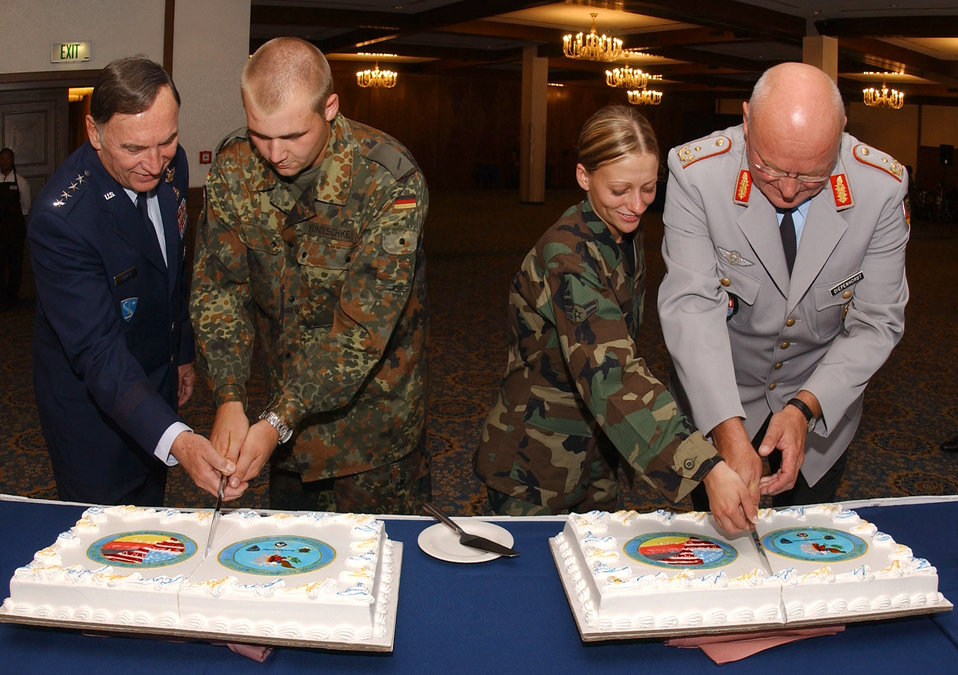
USAFE commander honors German military

(Left to right) Gen. William T. Hobbins, U.S. Air Forces in Europe commander; Pvt. Christian Kunitschke, German Army; Airman 1st Class Bobbie Ohm, 435th Security Forces Squadron; and Maj. Gen. Bernd Diepenhorst, German Army, cut the cakes during a Sept. 28 ceremony honoring the departure of the German Bundeswehr after more than three years of guarding the gates at USAFE bases in Germany. Nineteen-year-old Private Kunitschke and 20-year-old Airman Ohm represented the youngest servicemembers from each military to help celebrate the event.